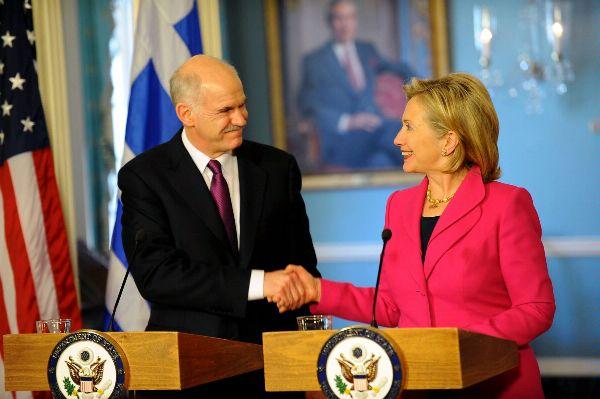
Secretary Clinton With Greek Prime Minister George Papandreou

U.S. Secretary of State Hillary Rodham Clinton with Greek Prime Minister George Papandreou at the U.S. Department of State in Washington, DC, March 8, 2010.